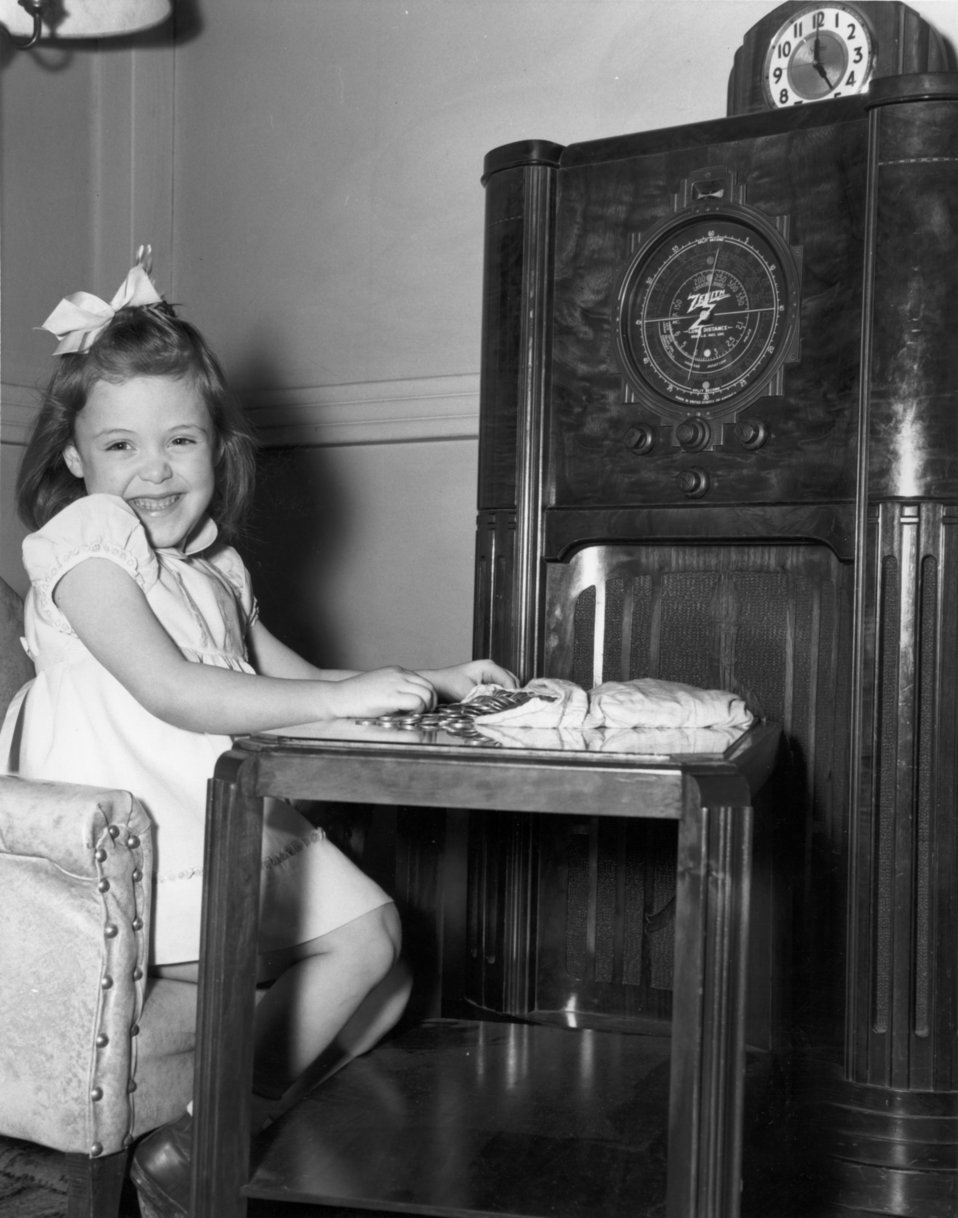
Child Listening to the Radio 1945 Oak Ridge

pro302 DOE photo Ed Westcott 2-22-1945 Carolyn Ruth Oak Ridge Tennessee